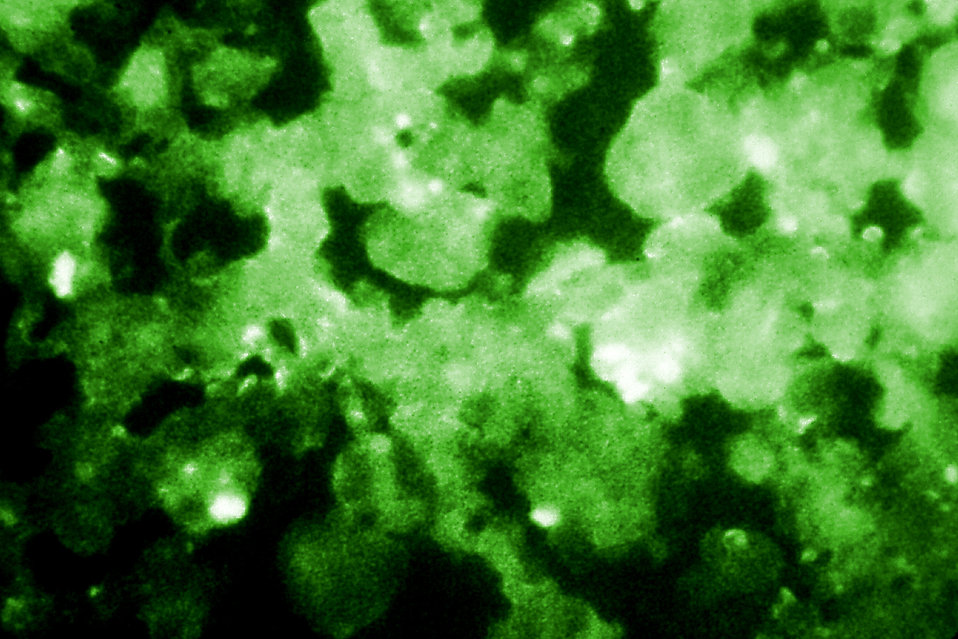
This photomicrograph depicted the results of using the Indirect Fluorescent Antibody (IFA) technique to confirm the presence of Legionella pneumophila bacteria in this human lung secretion sample from a suspected victim of Legionnaires' disease.